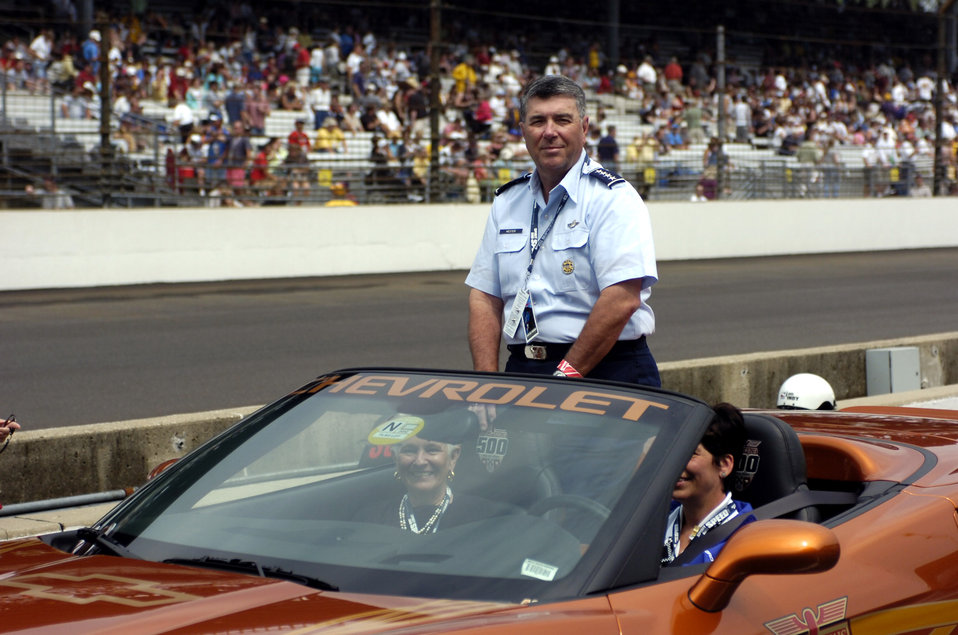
Gentlemen, start your engines!

Gen. Paul V. Hester takes a lap in one of the Indianapolis 500 official pace cars during pre-race activities May 27 in Indianapolis. The Chevrolet Corvette convertible was the official pace car of the 91st Indianapolis 500. General Hester is commander of Pacific Air Forces.